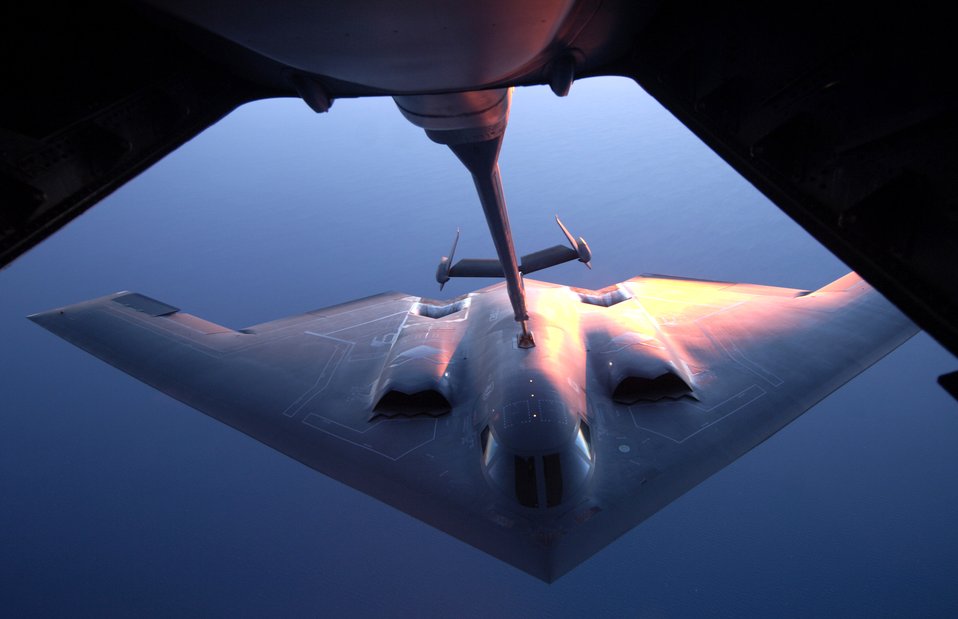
Exercise Green Lighting

A B-2 Spirit is refueled by a KC-10 Extender over Australia during exercise Green Lighting on July 25. The KC-10 and B-2 are from the 36th Expeditionary Wing at Guam. The exercise is testing U.S. capabilities and operational familiarity in the region for the Pacific bomber presence.